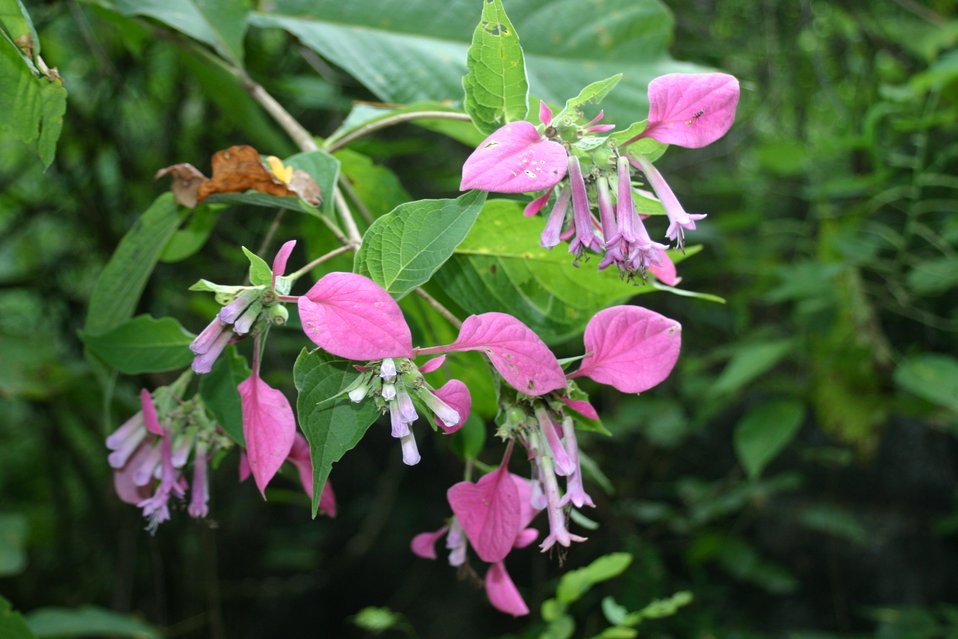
One kind of flower that provides food to hummingbirds in Colombia. Note the pink leaves. Supported by the Neotropical Migratory Bird Conservation Act.